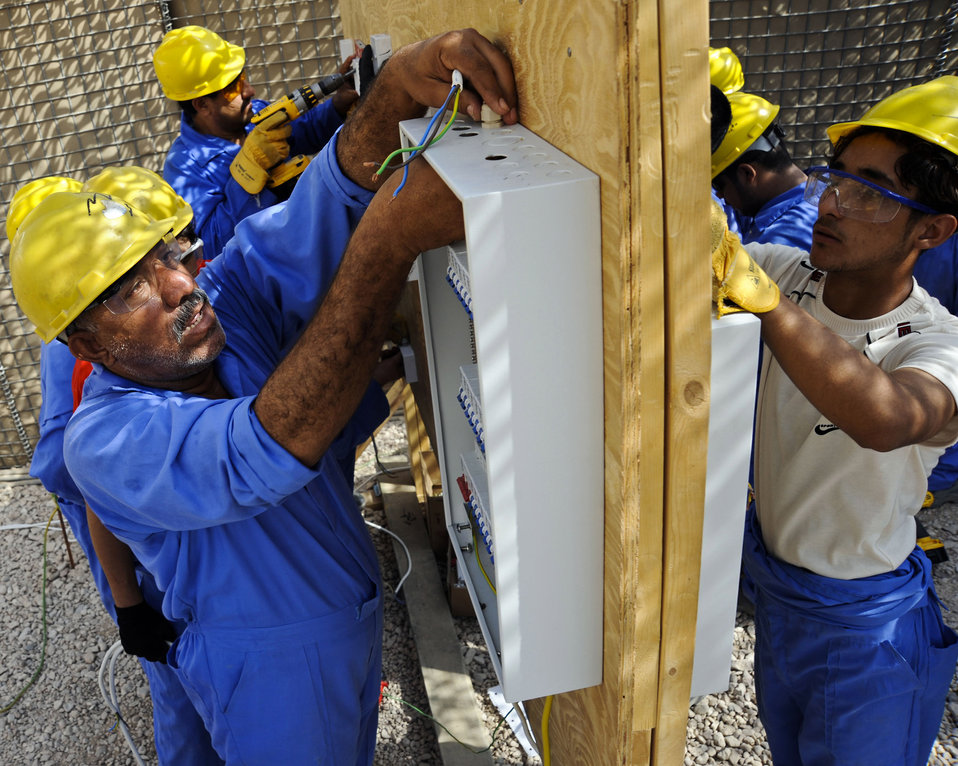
RED HORSE Airmen give Iraqis reason for hope

Iraqi student workers in the electrical training course wire-up an electrical panel during their final performance exam at Hawr Rajab, Iraq on Aug. 26. The course is apart of the Village of Hope program and is designed for former Sons of Iraq and Concerned Local Citizens to receive a trade that will help get them a job and rebuild their city that was battle damaged by al-Qaida in 2007.